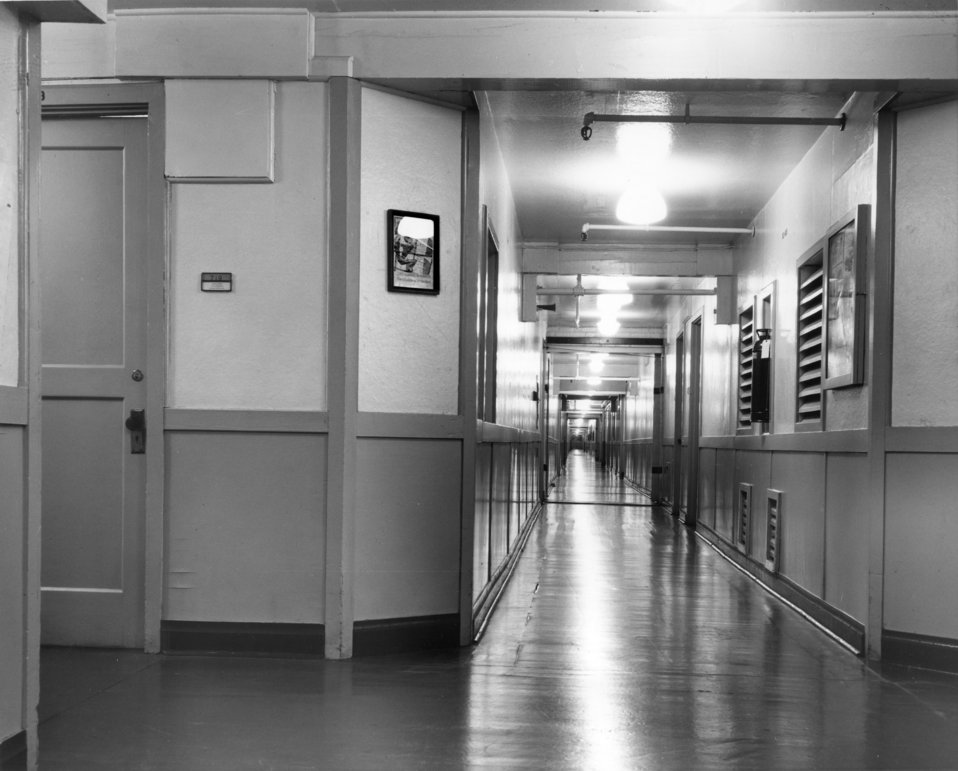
Inerior of AEC Admin. Bldg. Oak Ridge

59-0160 DOE photo by Ed Westcott 3-5-59 Oak Ridge Tennessee